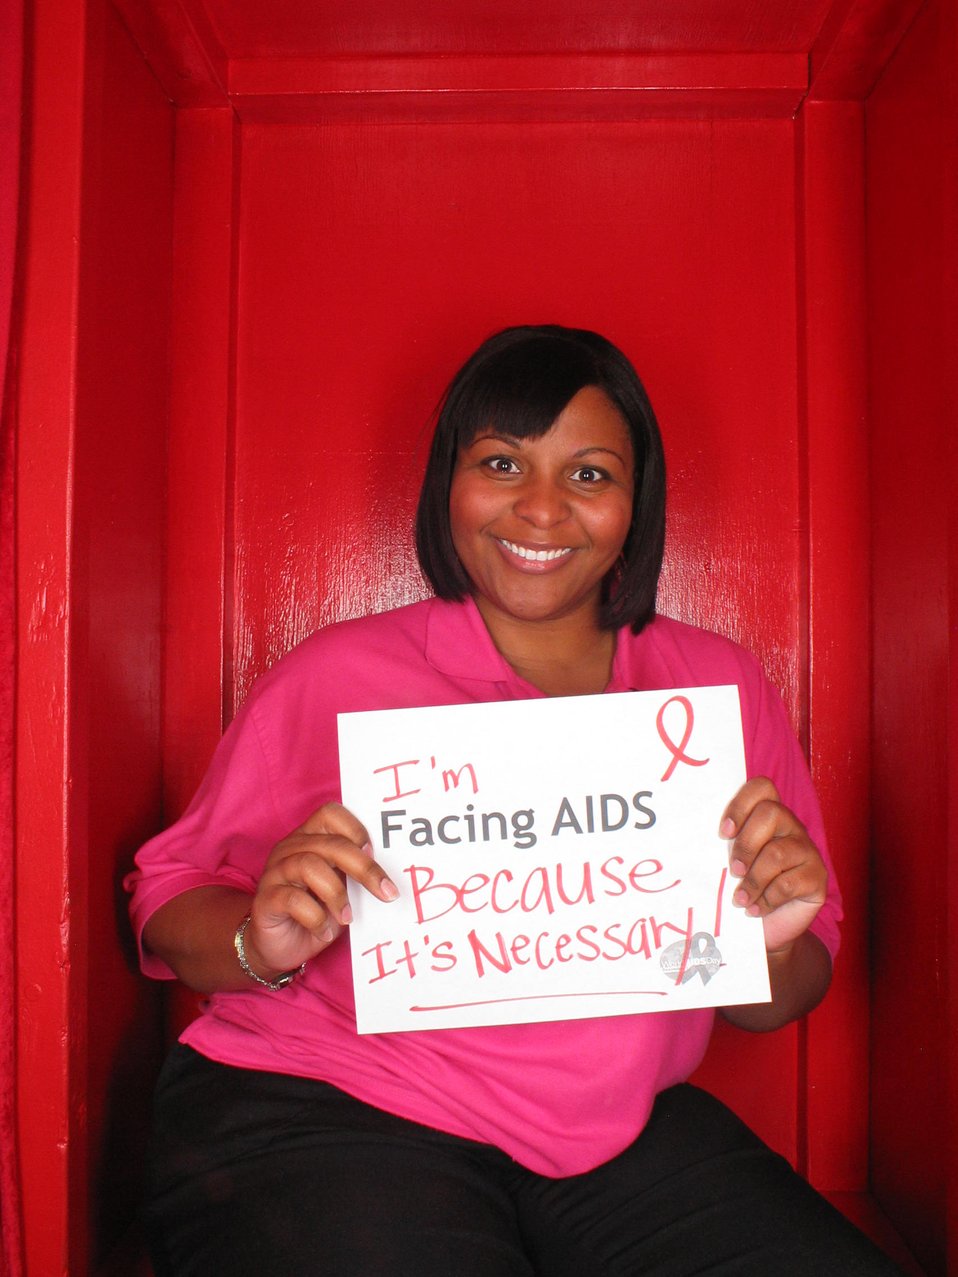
I'm facing Facing AIDS because its necessary!